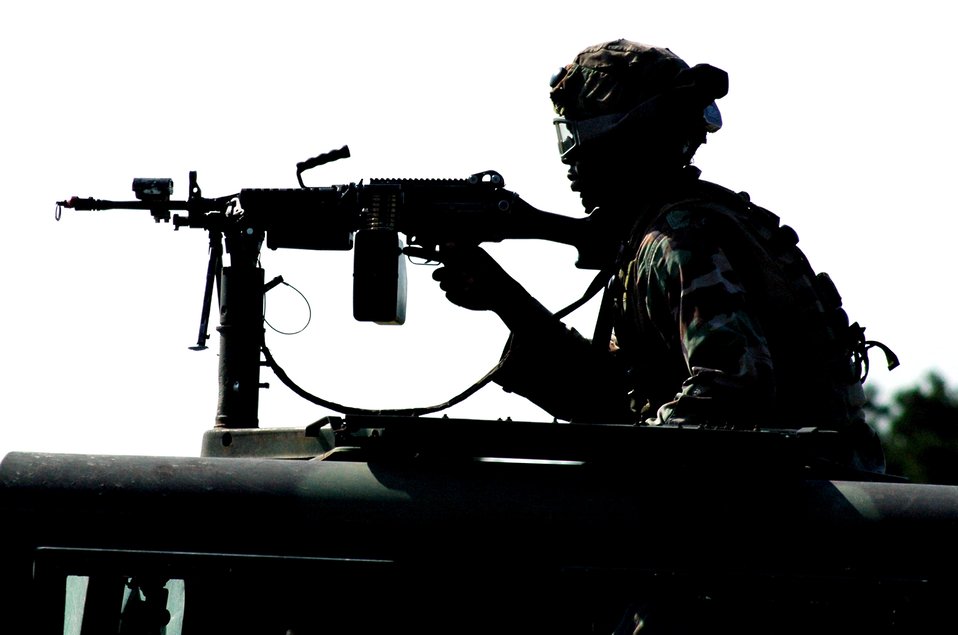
After one year, Phoenix Warrior course soaring high

A student in Phoenix Warrior Course 07-6 prepares for a convoy during field operations for the course Aug. 27 at Naval Air Engineering Station Lakehurst, N.J. The course is taught by the U.S. Air Force Expeditionary Center's 421st Combat Training Squadron from Fort Dix, N.J., and is designed for Air Force security forces to practice combat skills basics.